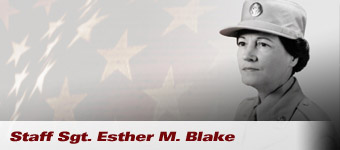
Staff Sgt. Esther M. Blake, the first woman to enlist in the new Air Force.